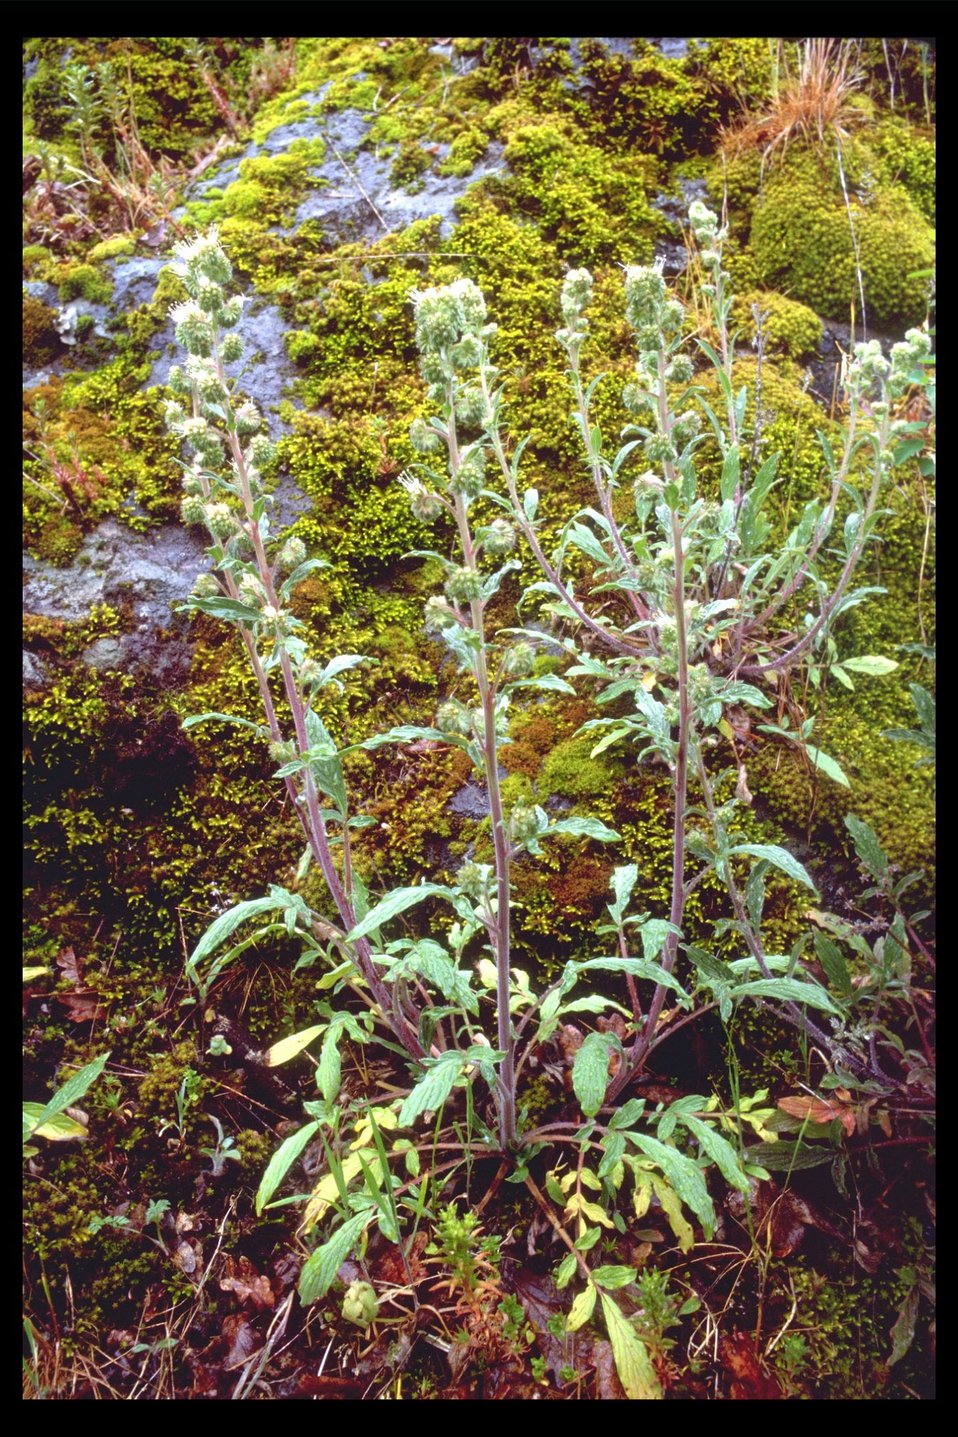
Vari-leaf Phacelia (Phacelia heterophylla) at Shady Cove near the Rogue River.